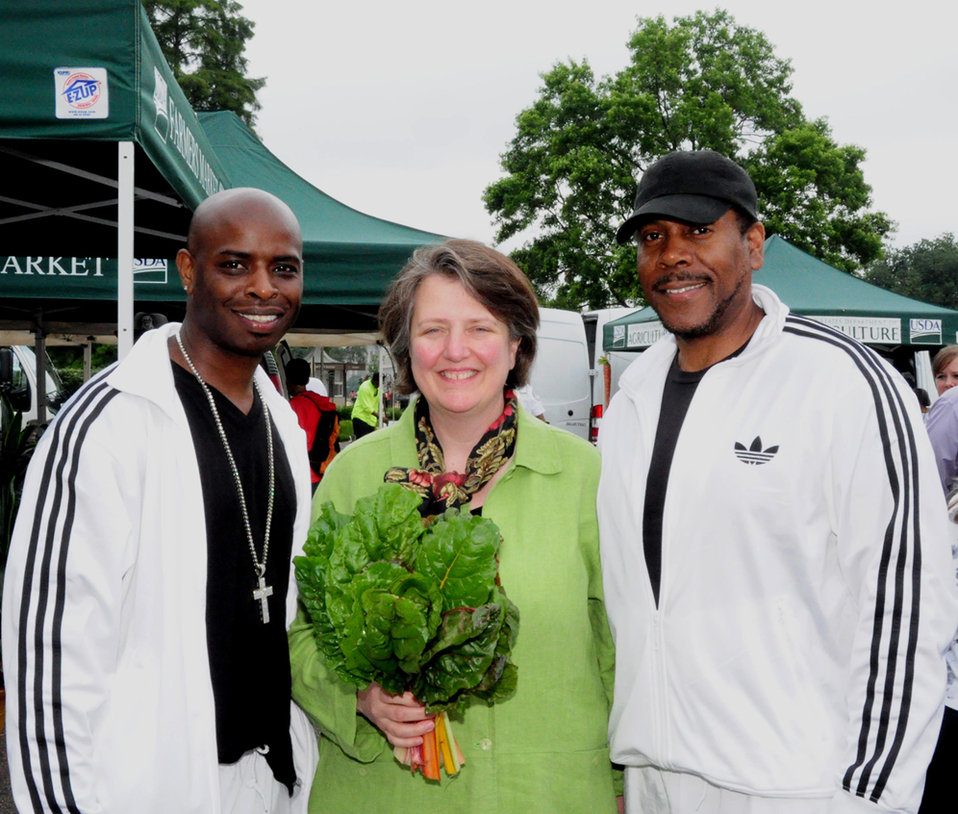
Dep-Hip-Hop-Pub-Hlth

Agriculture Deputy Secretary Kathleen Merrigan with members of the Hip Hop Public Health organization at the U.S. Department of Agriculture’s (USDA) Peoples Garden at 12th and Independence Ave. SW, Washington, D.C. on June 21, 2012. The organization educates others about the importance of regular exercise and healthy eating.